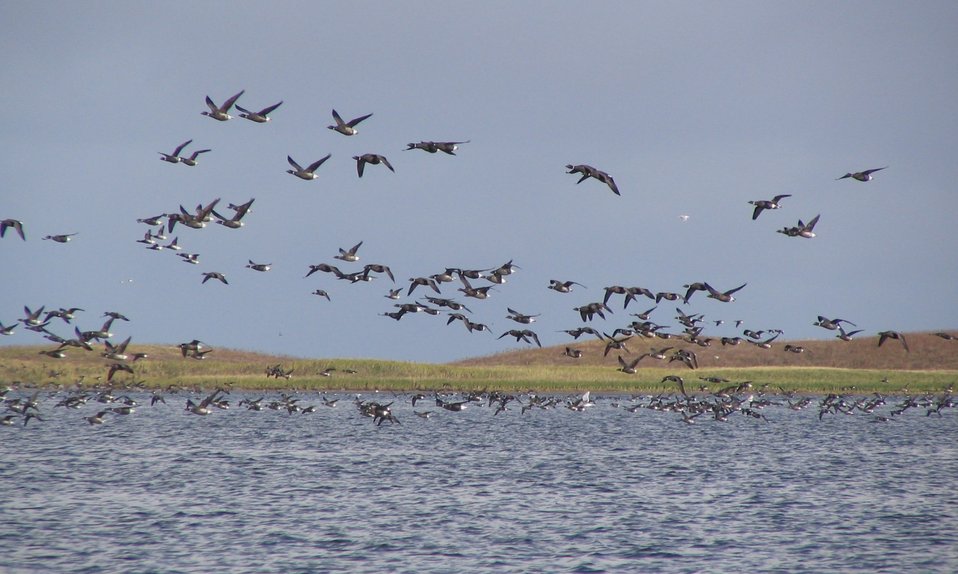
Brant at Izembek Lagoon

Izembek National Wildlife Refuge